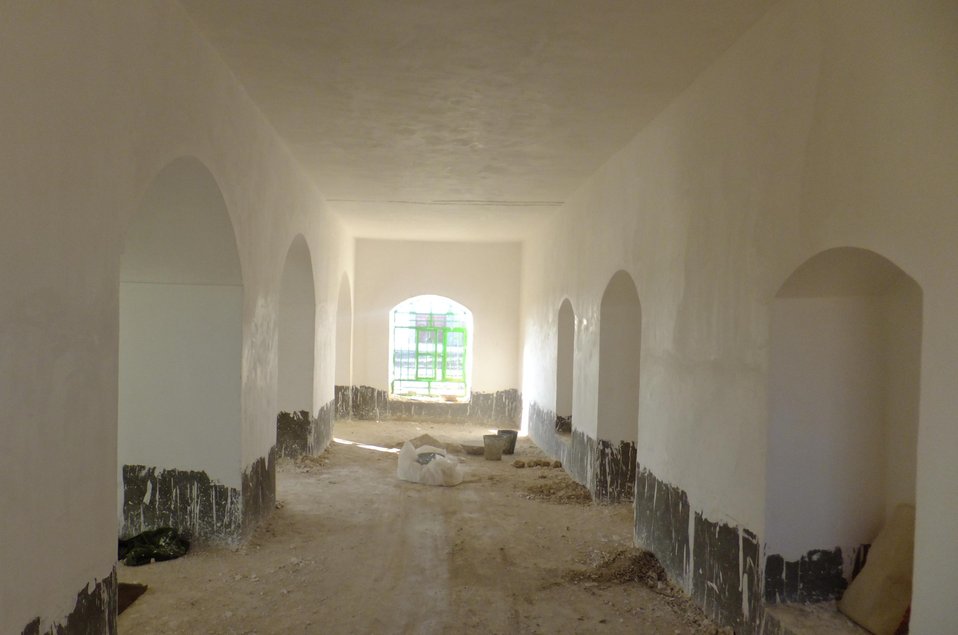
Work ongoing to refurbish the community center in Shewan Payen village in Bala Boluk District